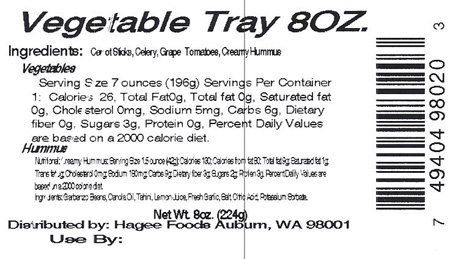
RECALLED – Hummus

July 16, 2013 – Product Recall – Hagee Foods Inc. dba Penny's Salsa Inc. Recalls Hummus Products Because of Possible Health Risk.